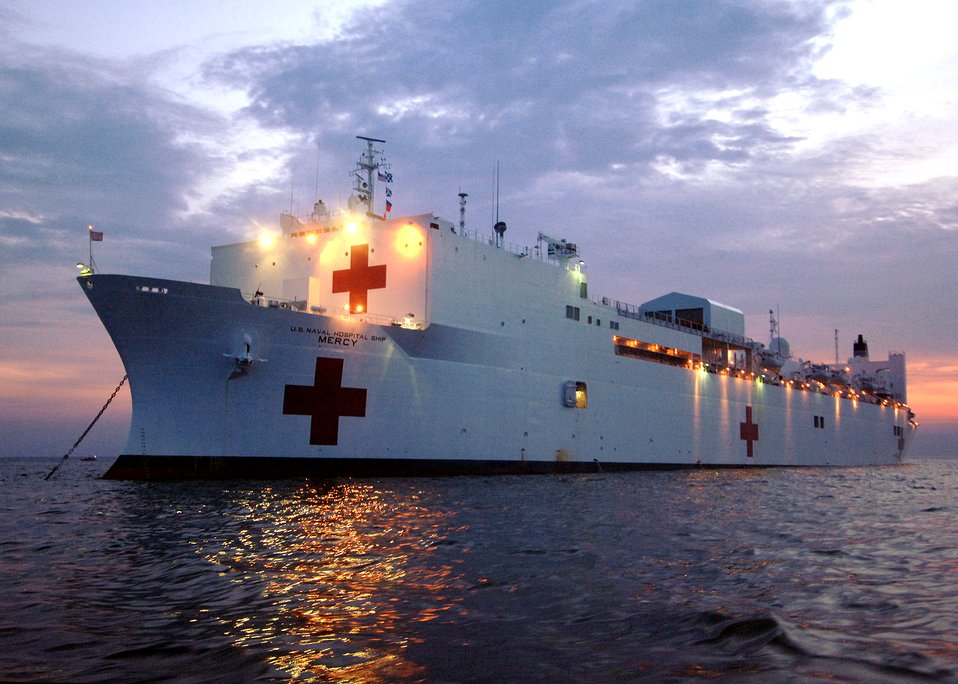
Airmen set sail aboard USNS Mercy for humanitarian mission

The U.S. Navy hospital ship USNS Mercy is anchored off the coast of Manila, the Philippines. Three Airmen from the 374th Medical Group at Yokota Air Base, Japan, are deployed on the ship as it delivers aid and humanitarian assistance to Southeast Asia.